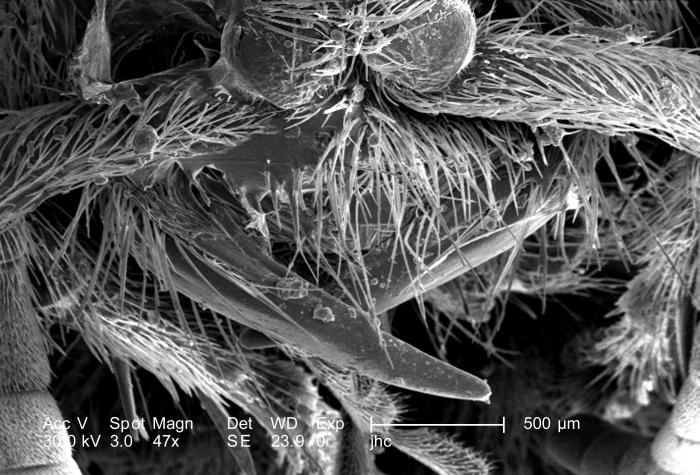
At 47X, this scanning electron micrograph (SEM) showed the head, and some of the thoracic region from an anterior view of a female velvet ant, Dasymutilla sp.. Note the two anteriorly-placed antennae with their rounded "scapes" that are the most apparent head appendages. Like the antennae, the numerous 'hairs' or setae adorning almost all of the insect's exterior surfaces, act as sensory structures, supplying the organism with information about its environmental parameters. The jointed legs, from which the insect's Phylum Arthropoda is derived, i.e., Arthro = 'jointed', and poda 'leg', are also partially visible, emanating from the thoracic region.